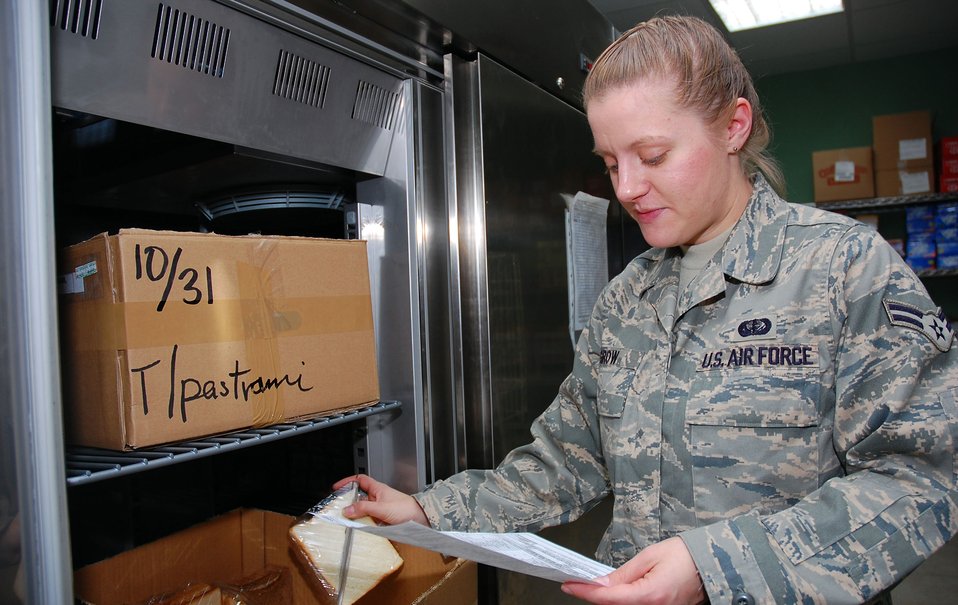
Deployed desert dining is delightful at the DFAC

Airman 1st Class Kristen Grow, 386th Expeditionary Services Squadron food services specialist, prepares a flight meal inventory Nov. 2 here. Airman Grow is deployed from Barksdale Air Force Base, La.